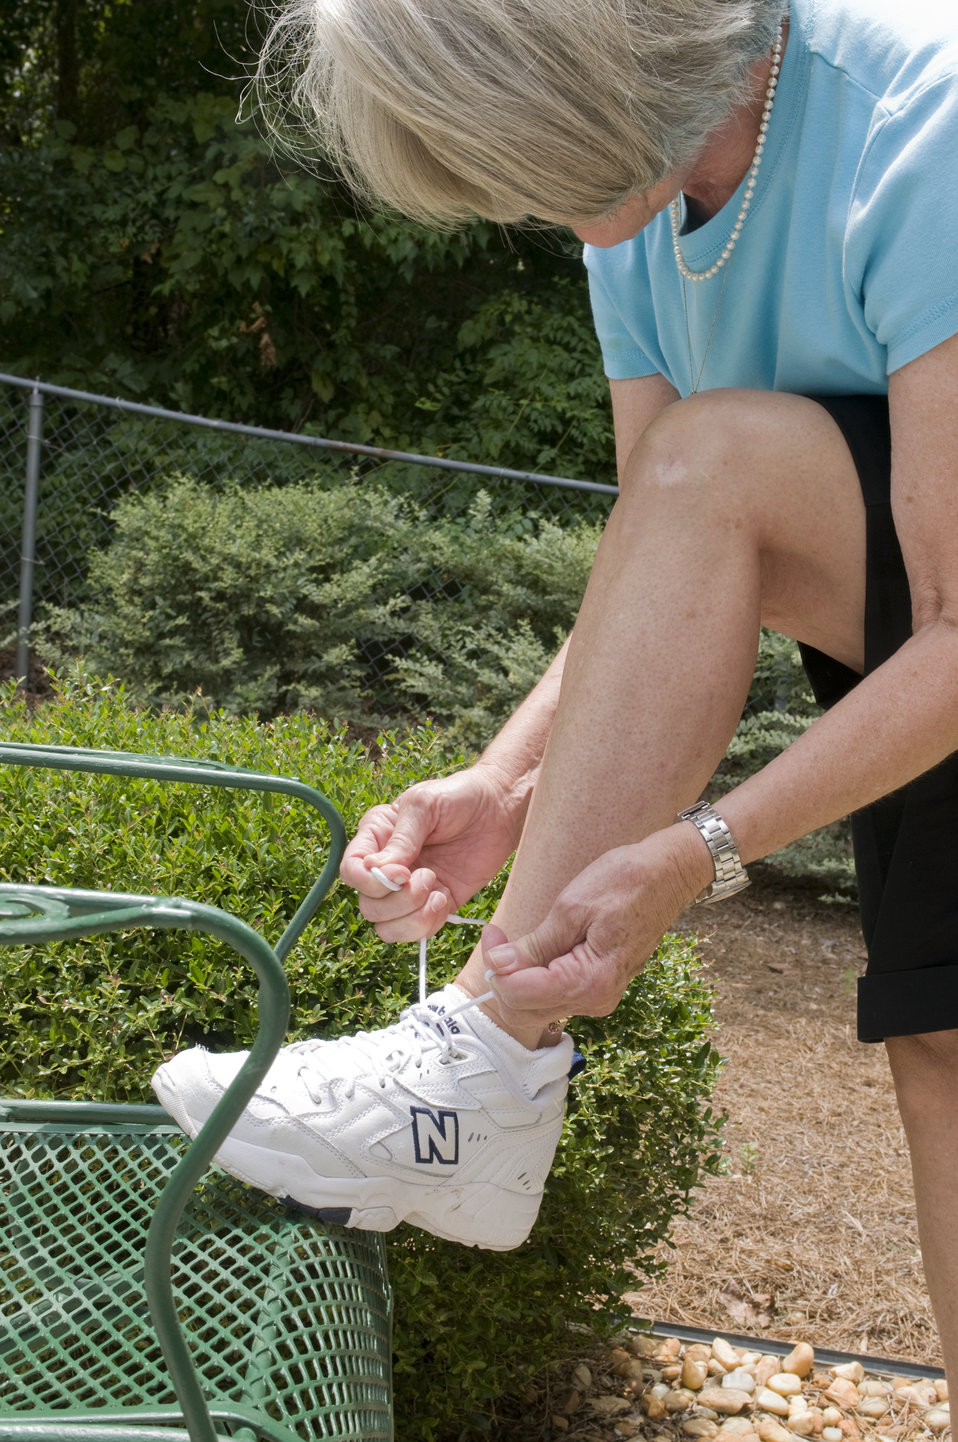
Using a patio chair as a foot stool, the woman pictured here was about to set out on her daily walk on a bright sunny day. Here she was bent over in the process of tying her left sneaker laces. It was a sunny Georgia day, and she'd applied a layer of sunscreen to her sun-exposed skin. Hopefully, she'd also bring a bottle of water with her on her walk, as well, in order to avoid the possibility of dehydration.